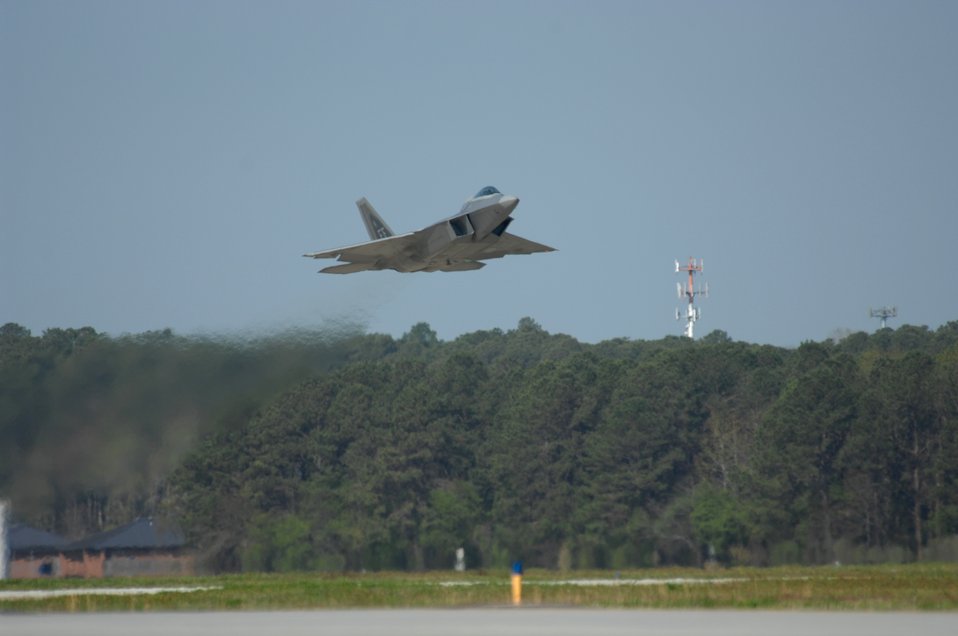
Operational readiness inspection

An F-22 Raptor takes off April 10, 2011, during an operational readiness inspection at Langley Air Force Base, Va.